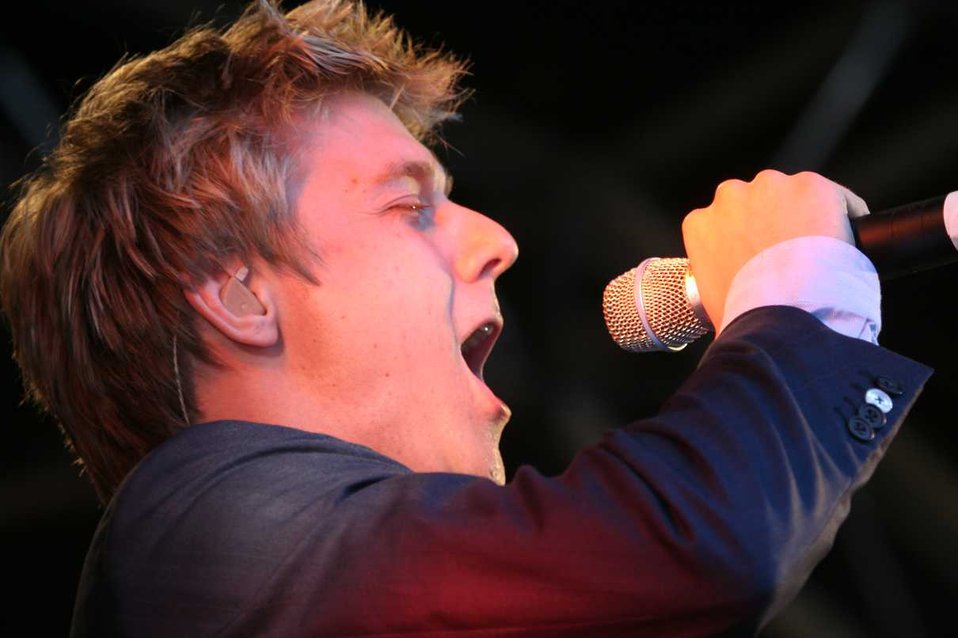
Ingatestone July 2007 Image: Peter French Flying Tigers Studio www.flyingtigers.co.uk